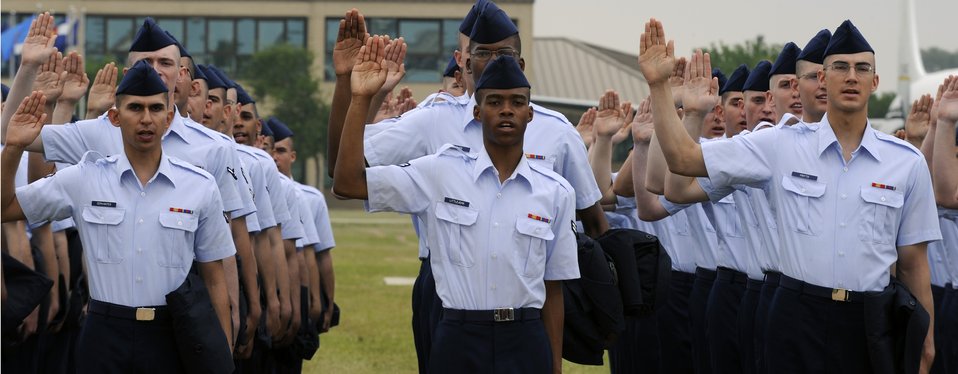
From basic trainee to Airman

Basic trainees raise their right hand April 24 as they recite the oath of enlistment at Lackland Air Force Base, Texas.